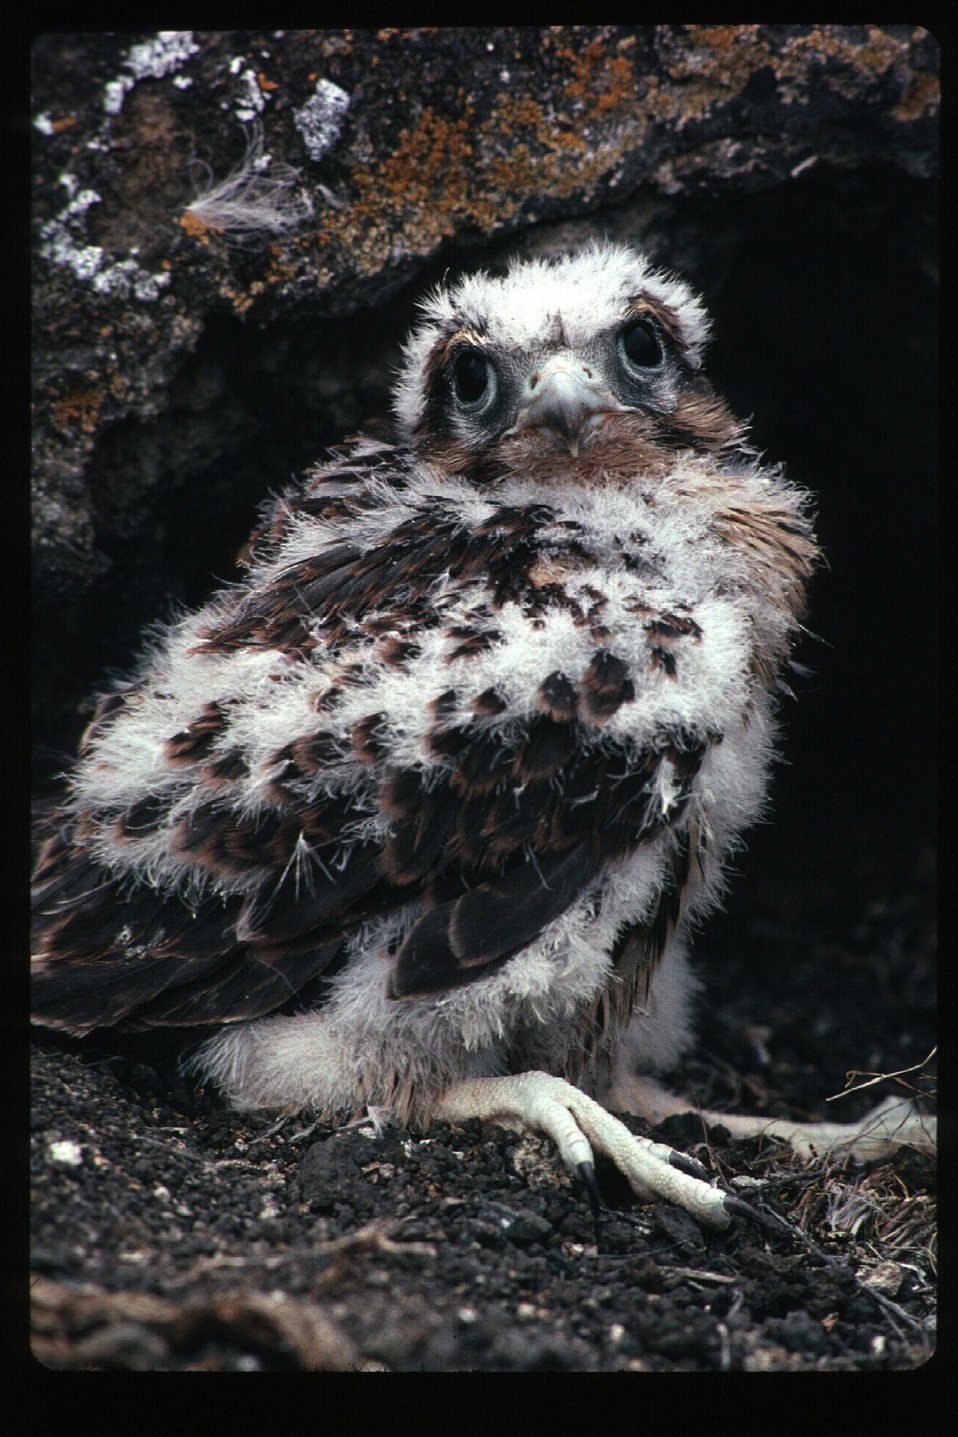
Prairie Falcon chick Birds of Prey National Conservation Area BOP NCA Owyhee Field Office LSRD Lower Snake River District